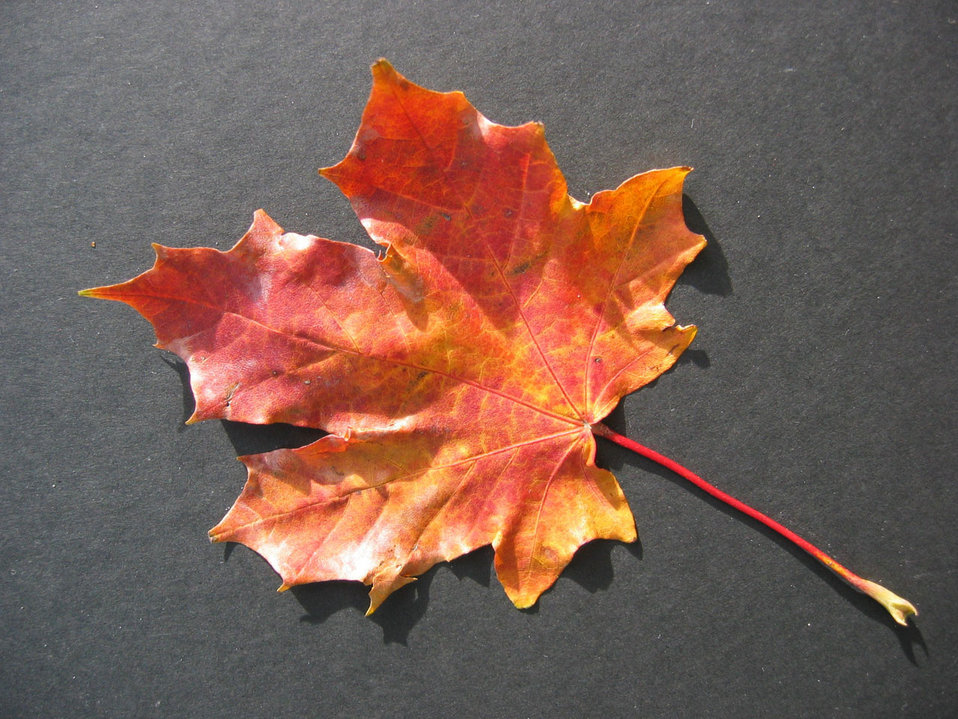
Autumn leaf

Still life - autumn leaf.